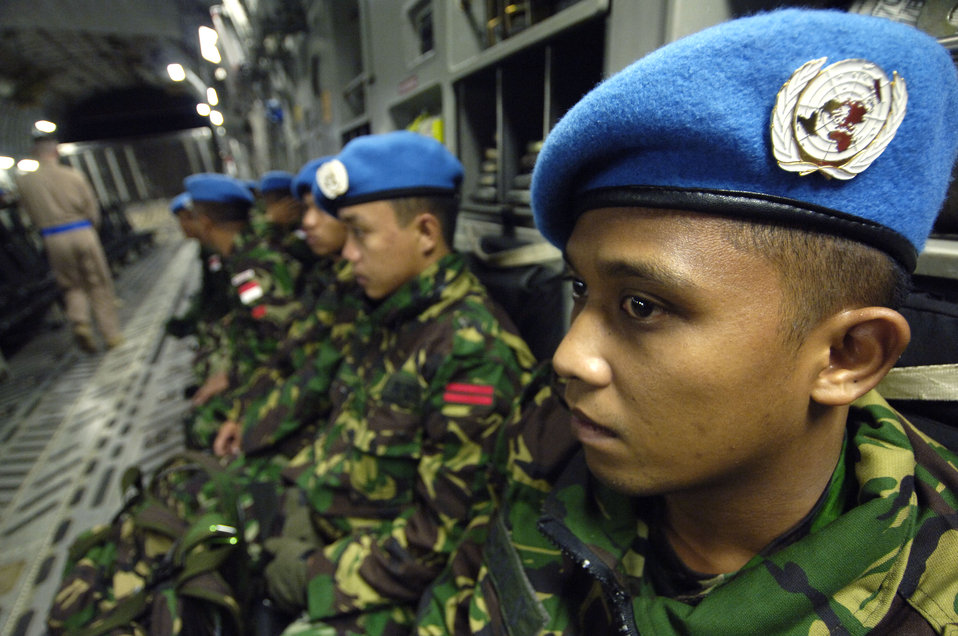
Moving the peacekeepers

Indonesian peacekeeping troops reflect on the mission ahead as the C-17 Globemaster III loadmaster makes one last check of the area before takeoff Nov. 8. They are deploying to Lebanon in support of UNIFIL, the United Nation's Interim Force in Lebanon.